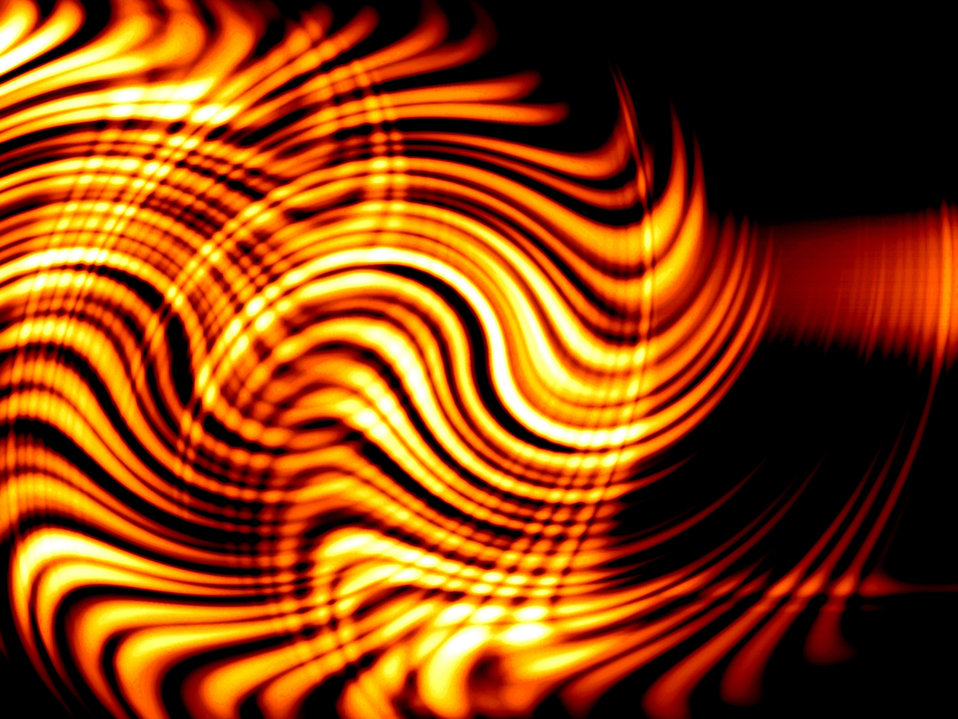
Background 357

Background style of sparks out of focus.